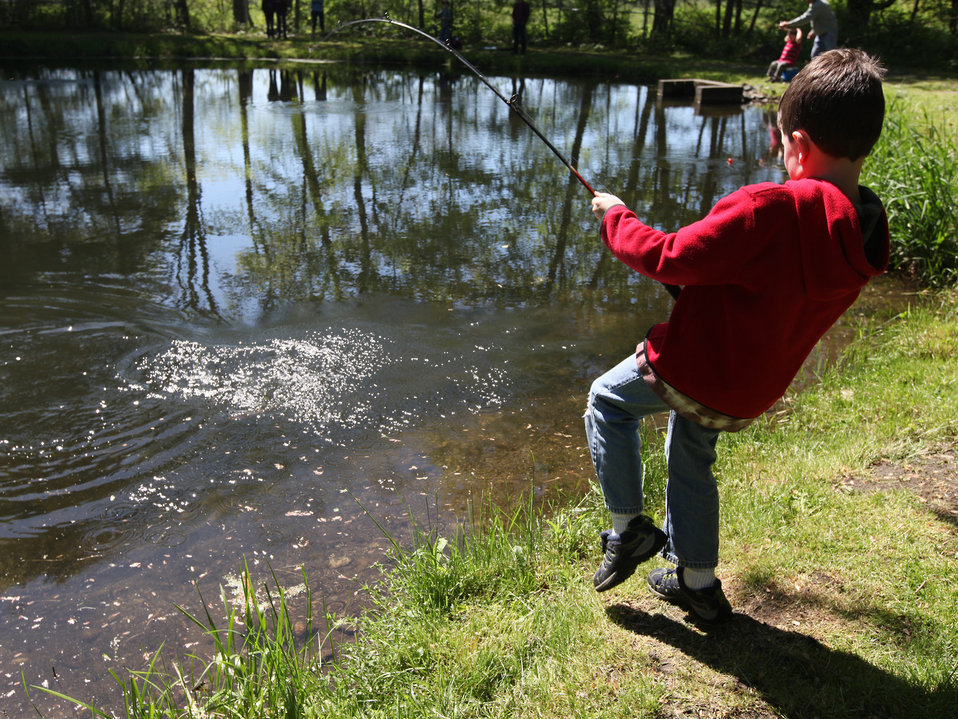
Youth fishing at Richard Cronin National Salmon Station, MA.